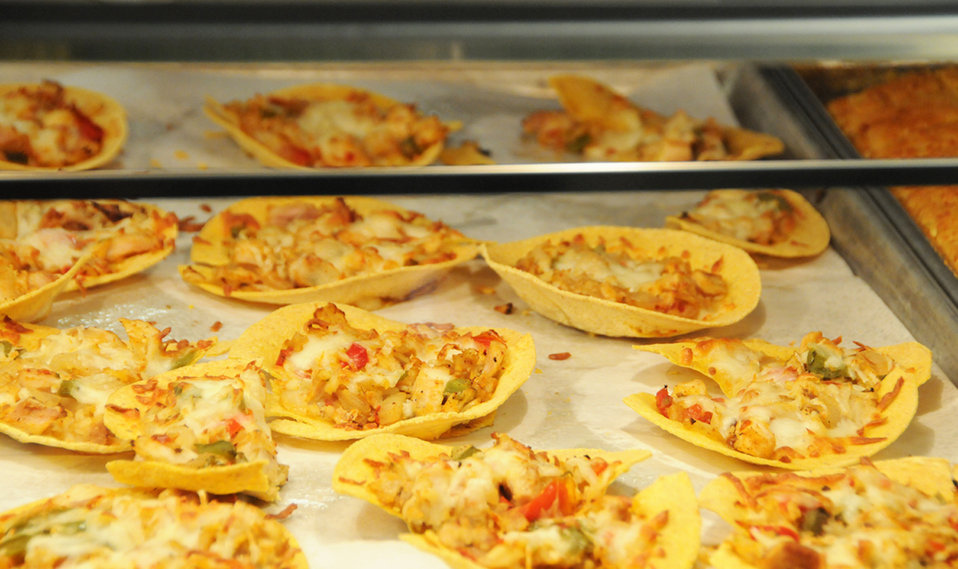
Chix tostada web

Chicken tostadas were one of the many foods featured at the event. The tostadas were made using USDA Chicken Fajita Meat.